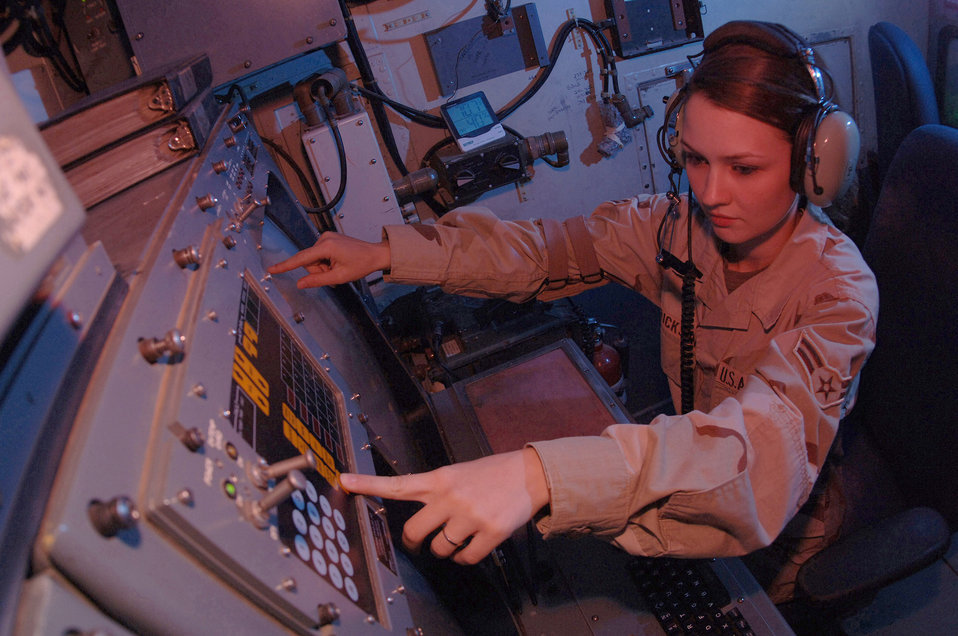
Keeping control

BALAD AIR BASE, Iraq -- Airman 1st Class Jessica Hendrickson accesses pages on a voice control access unit here. The 727th Expeditionary Air Control Squadron is one of five tactical command and control agencies in the Air Force. It is made up of maintainers, aircraft controllers and operators who perform radar surveillance. Airman Hendrickson is deployed from Mountain Home Air Force Base, Idaho.